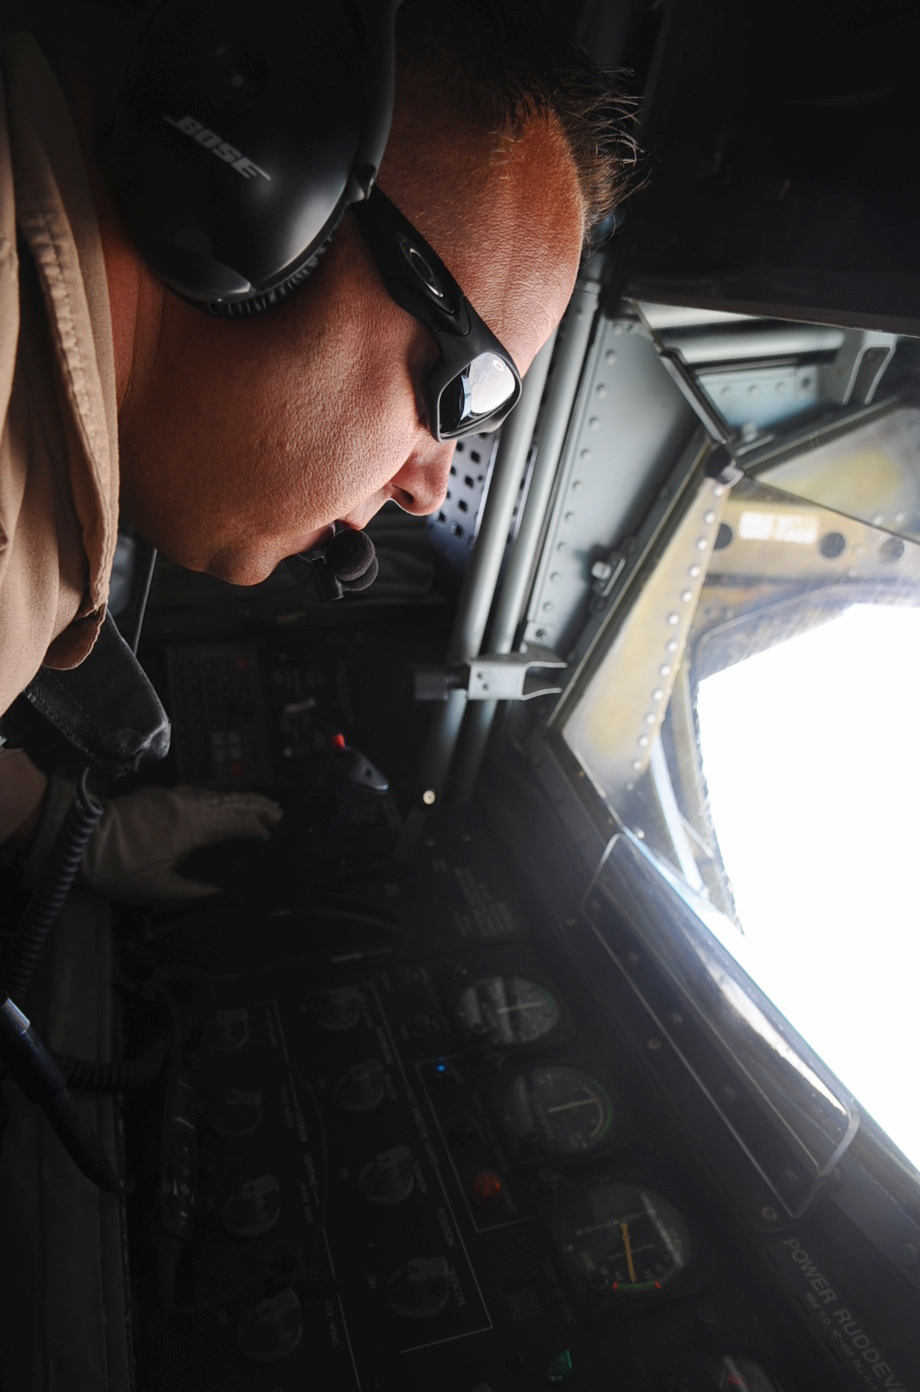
Tanker operation

Tech. Sgt. Jeff Stoermer positions a refueling boom to refuel an E-3 Sentry May 25, 2010, while flying over Afghanistan. Sergeant Stoermer is a 340th Expeditionary Air Refueling Squadron boom operator.